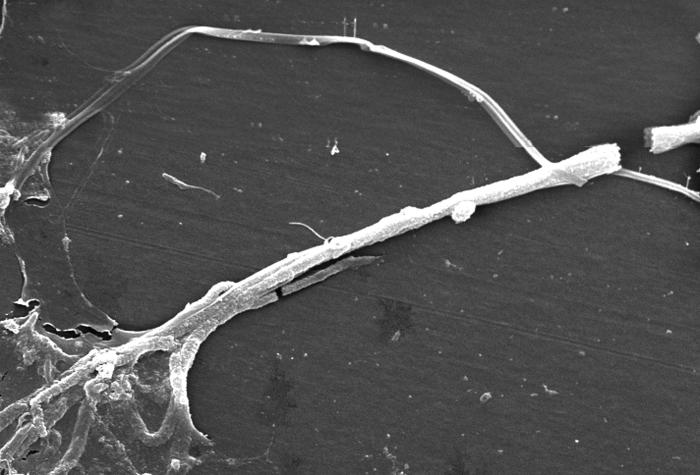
This scanning electron micrograph (SEM) of an untreated water specimen extracted from a wild stream mainly used to control flooding during inclement weather, revealed the presence of unidentified organisms, which included bacteria, protozoa, and algae. This view captured what may have been an algal specie, which had become enmeshed in a gelatinous biofilm at left.